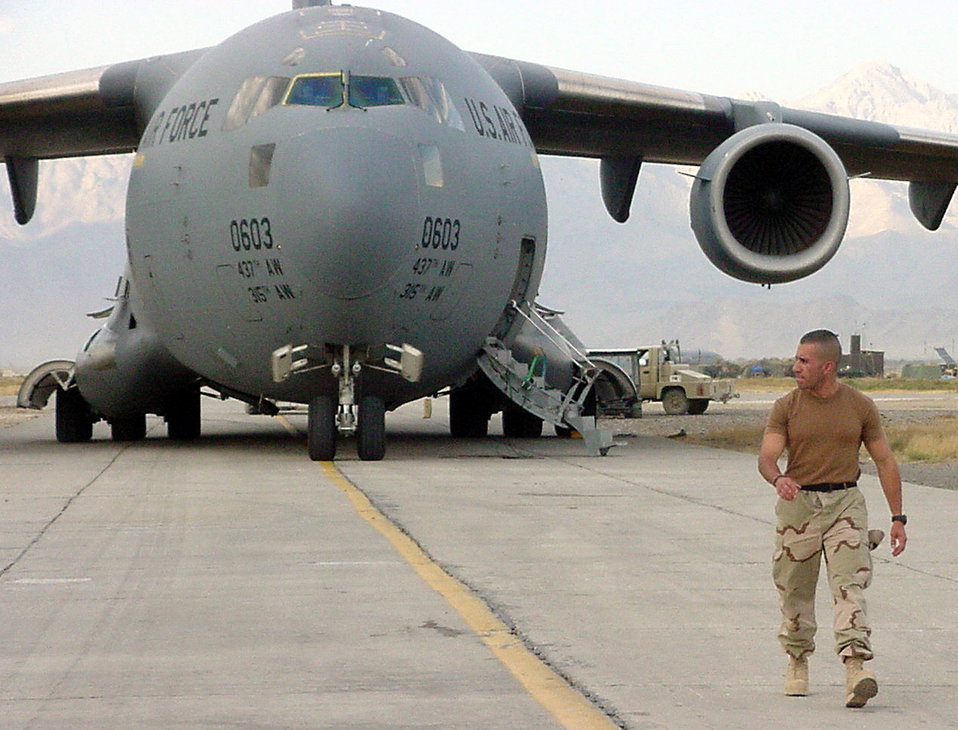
Just walk away

BAGRAM AIR BASE, Afghanistan -- Capt. Edgardo Cruz-Velez walks away from a C-17 Globemaster III. C-17s are used extensively to deliver supplies and people to various forward-deployed locations throughout Southwest Asia. Cruz-Velez is assigned to U.S. Central Air Forces-Forward.